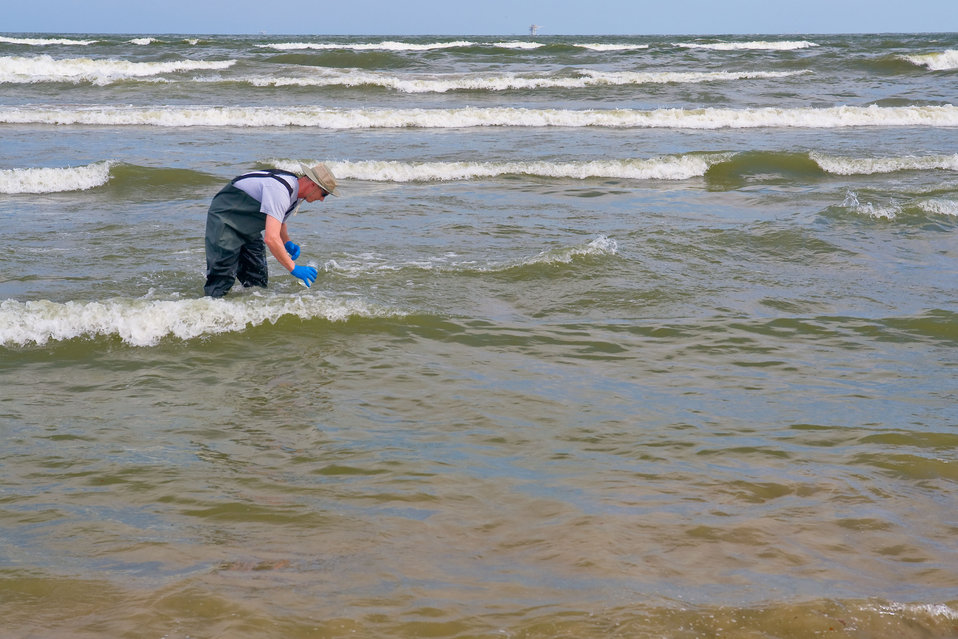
June 4, Collecting water for testing at Grand Isle State Park, La

Patrick Warnick, EPA contractor collects water samples at Grand Isle State Park, Grand Isle, LA.